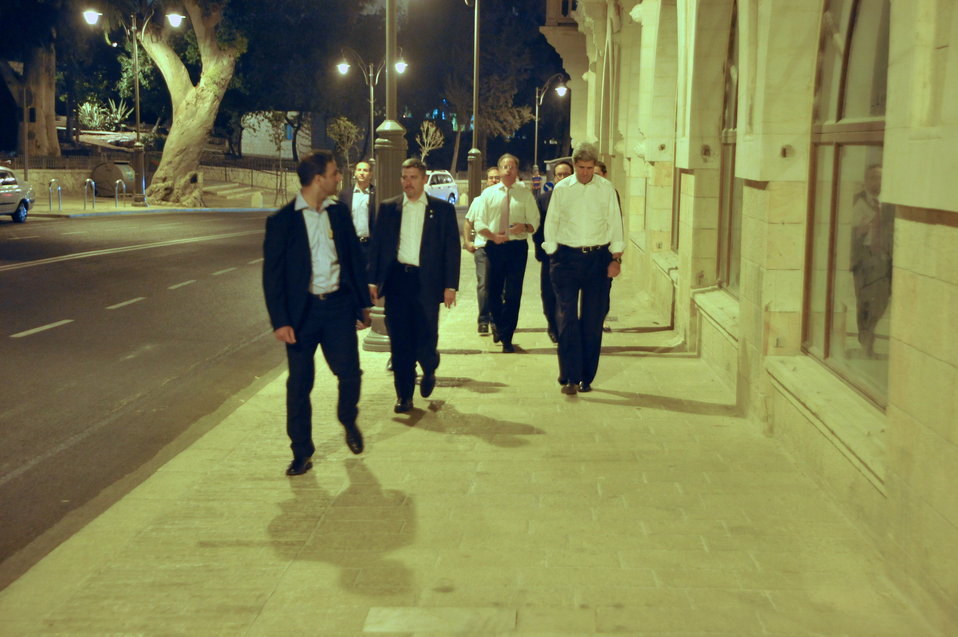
Secretary Kerry Takes a Walk in Jerusalem

U.S. Secretary of State John Kerry, accompanied by Deputy Special Envoy for Middle East Peace Frank Lowenstein and other senior advisors, takes a walk in Jerusalem after more than six hours of talks with Israeli Prime Minister Benjamin Netanyahu on June 30, 2013.